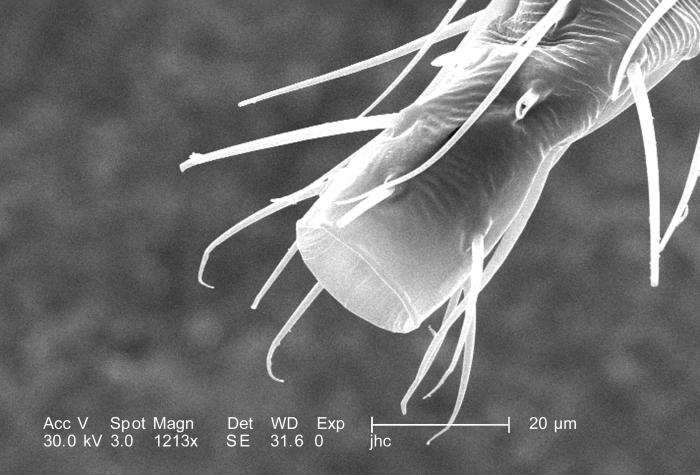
Under a moderately high magnification of 1213X, this scanning electron micrograph (SEM) revealed some of the morphologic features located at the distal end of an unidentified 1/4"-sized black flying insect's antenna. This arthropod also displayed a small red mark on its dorsum. This antenna may have been fractured at its tip, which created the cup-like appearance, into which would have fit yet another flagellar segment.The antenna is composed of three main regions: scape, pedicle, and flagellum. The scape attaches the sensory organ to the head region, and the pedicle joins the distal, jointed flagellum to the scape. The bilaterally situated antennae are not the only structures in the insect's repertoire of sensorial apparatuses that provide it with information of changes in its environment. In fact, the hairs on its head are also used as integral sensorial instruments, and are known as "setae', evident in this SEM.